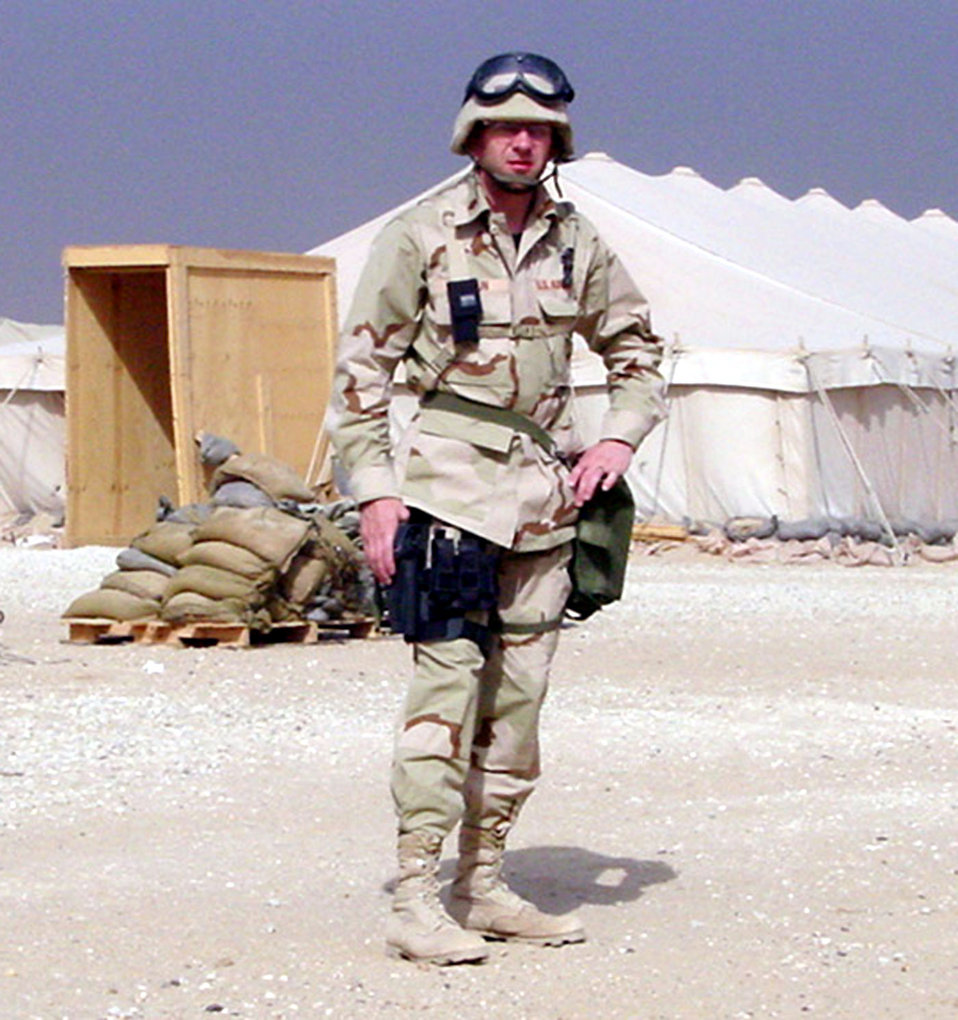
Major learning curve

CAMP VIRGINIA, Kuwait -- Maj. Ken Sersun stands outside his tent here during Operation Iraqi Freedom. The major said he learned more about the Air Force mission during his first deployment than at any point in his 16-year career.